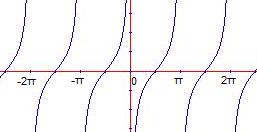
Illustrative example as part of a proof of the Routh Stability Criterion Eric Helfgott (created and uploaded by)